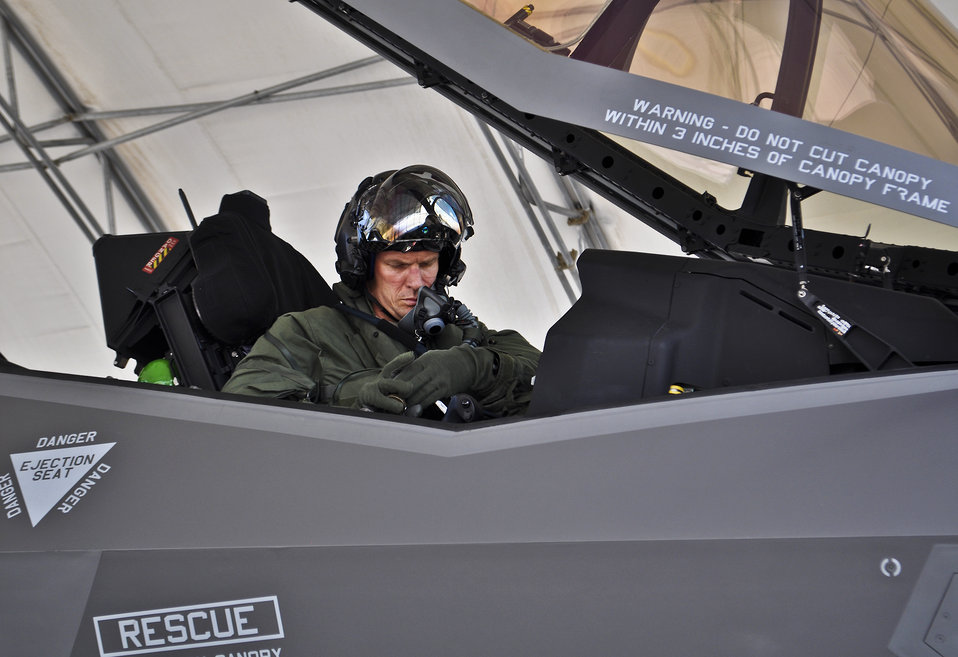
F-35A

Lt. Col. Lee Kloos, 58th Fighter Squadron commander, prepares to exit an F-35A Lightning II joint strike fighter, after a successful sortie May 31, 2012. Kloos is the first non-developmental test pilot to fly the JSF, and now trains other 33rd Fighter Wing initial cadre pilots to fly the F-35.